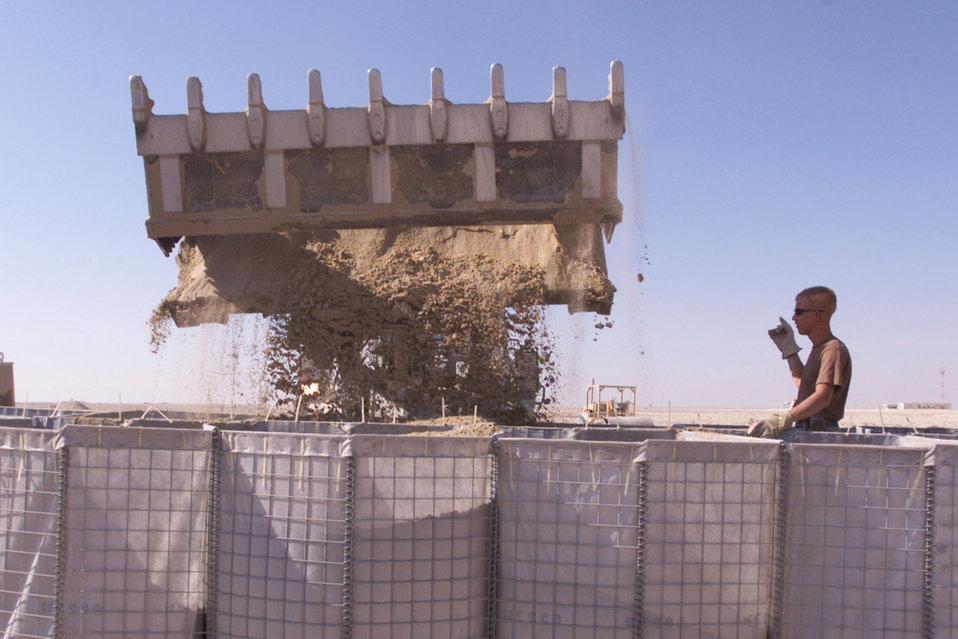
Barrier building

OPERATION ENDURING FREEDOM -- Airman 1st Class Derek Geske, a security forces specialist from the 366th Expeditionary Security Forces Squadron, watches as sand is dumped into expandable barriers at an Operation Enduring Freedom location Dec. 28.